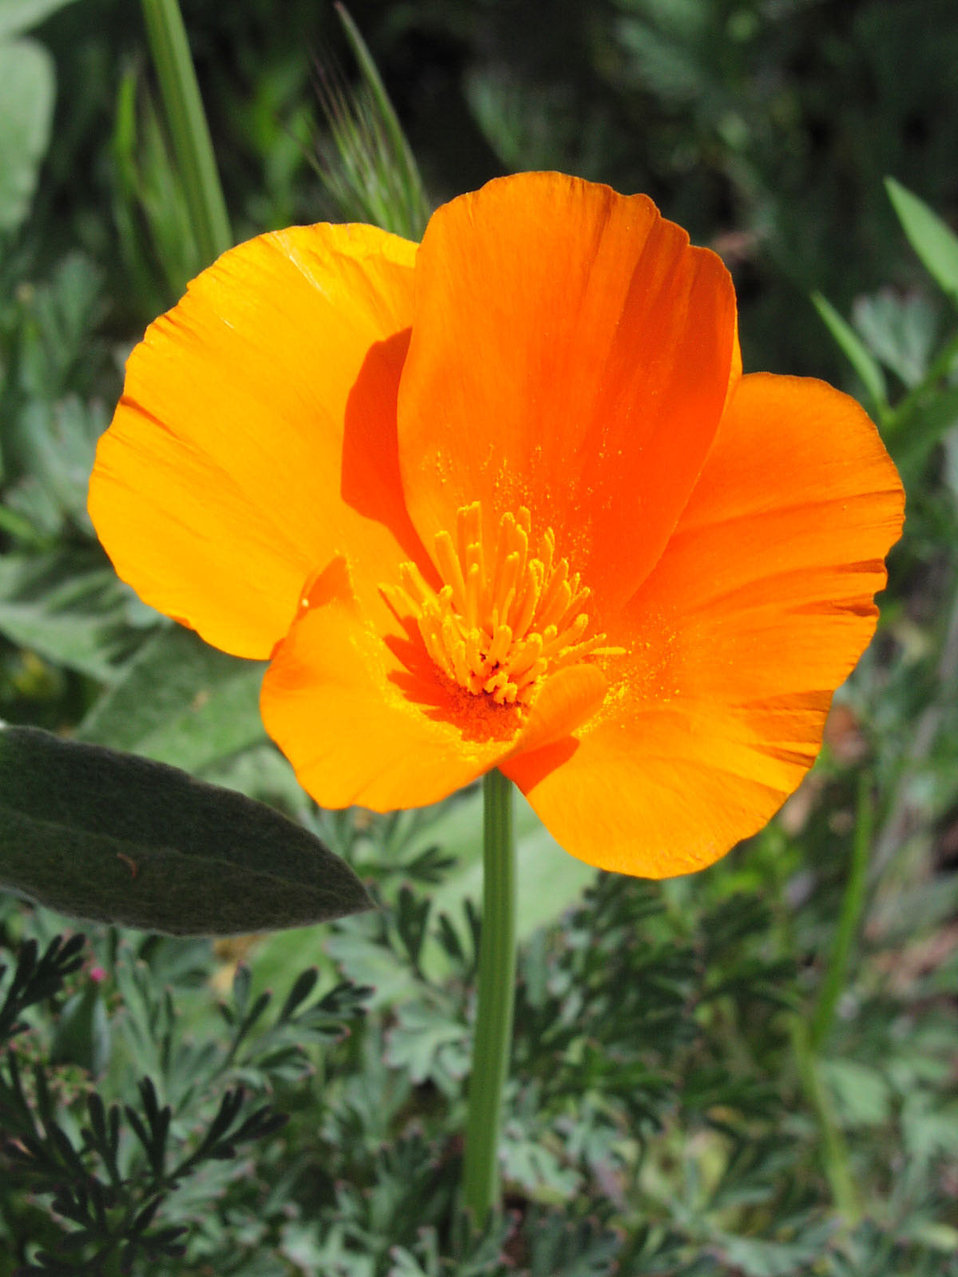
Eschscholzia californica — California poppy. Taken on the grounds of the Vedanta Society temple, in the Santa Ynez Mountain foothills above Montecito, southern California. photo by User:Antandrus, March 18, 2002.